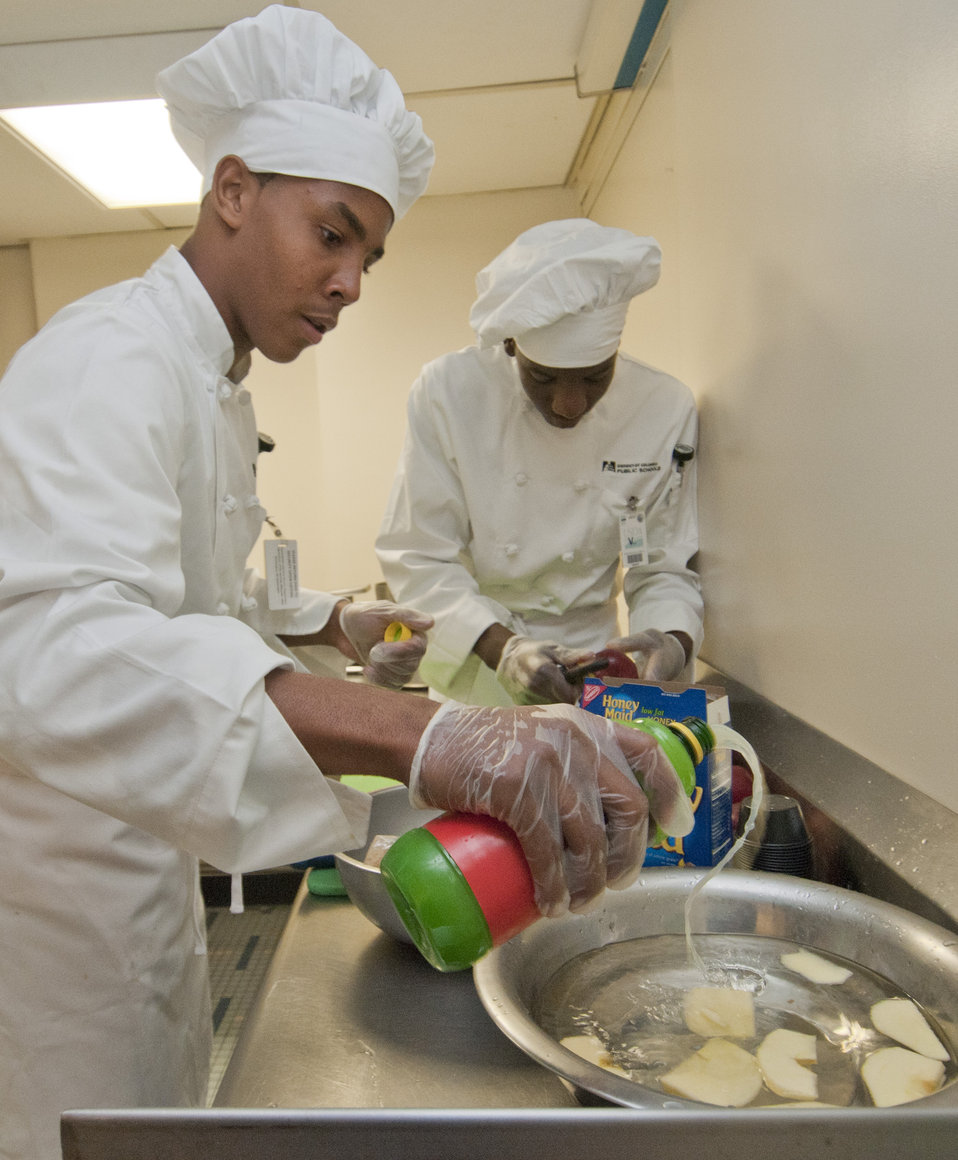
Representing Washington, DC Public Schools student chefs Victor Rodgers (left) and Dominique Mitchell prepare their food for the Cooking Up Change, National Healthy Cooking Competition at the USDA in Washington, DC, on Monday, May 23, 2011.